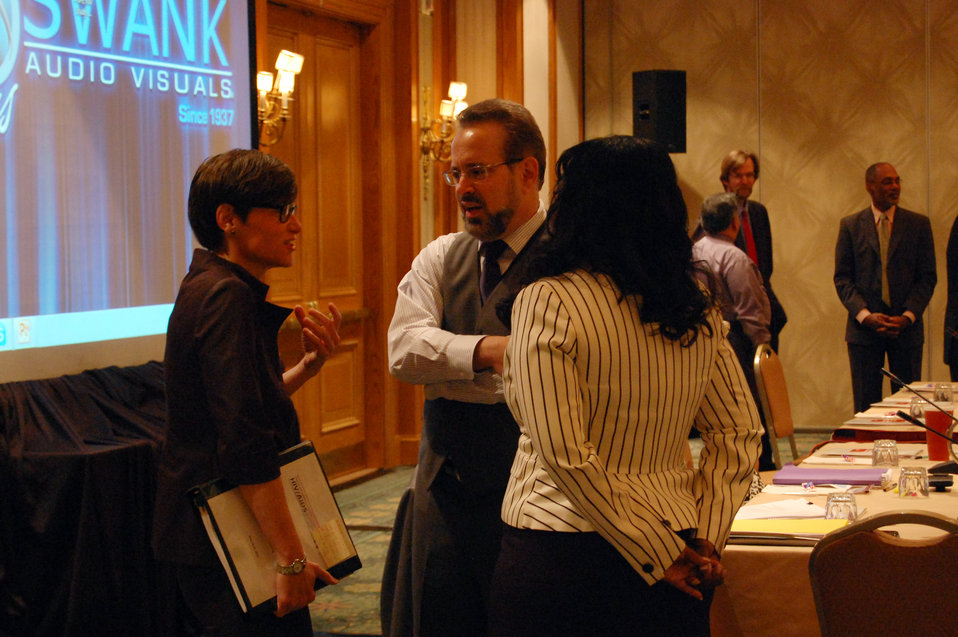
PACHA conf011